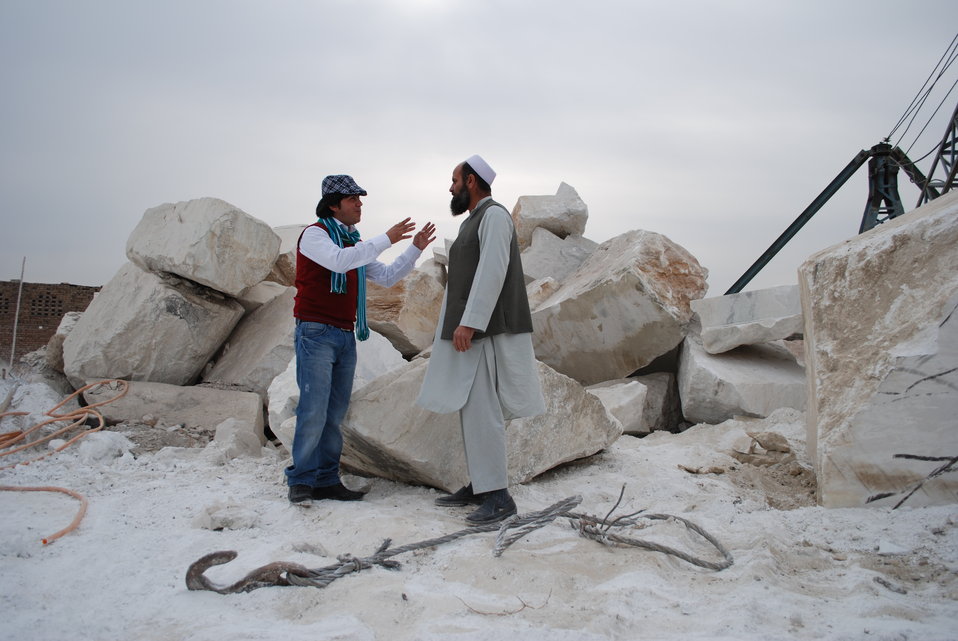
'On the Road' in Nangarhar Province